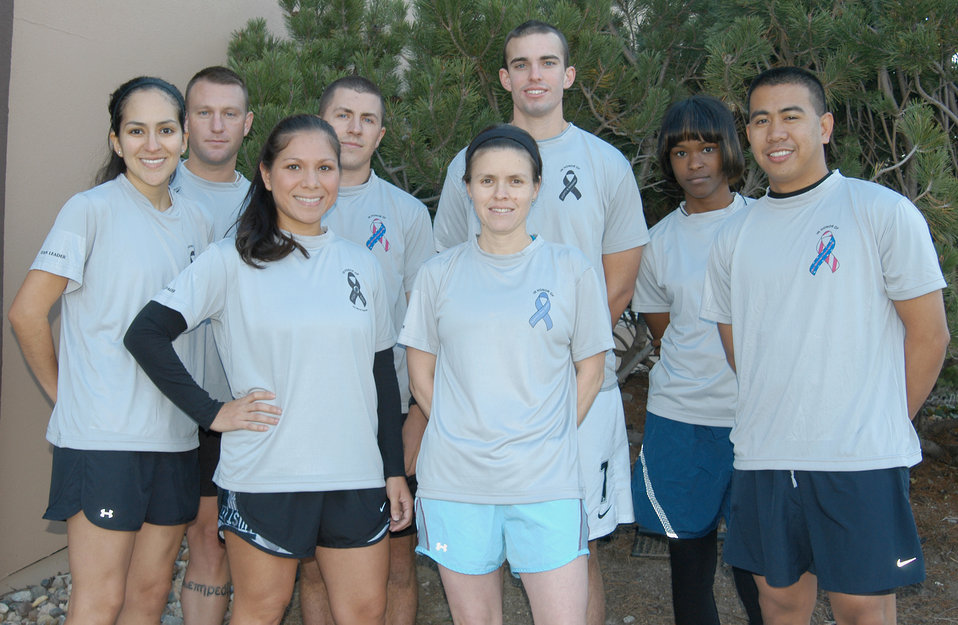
Airmen run in memoriam

Members of the 55th Force Support Squadron marathon running team pose for a group photo Oct. 8, 2010, outside the field house at Offutt Air Force Base, Neb. The team is training to run the Rock 'n' Roll San Antonio Marathon on Nov. 14, 2010.